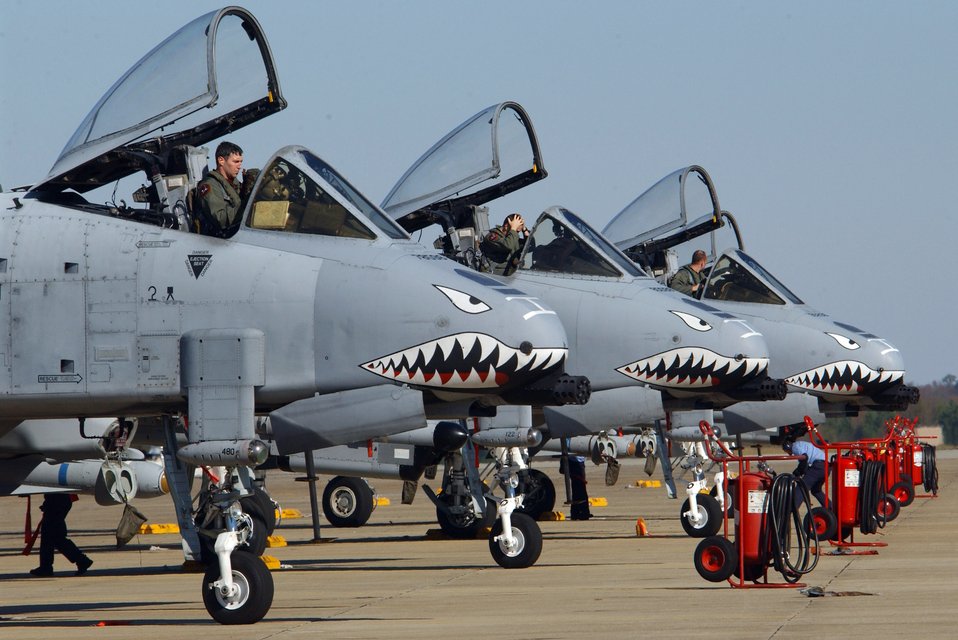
Thunderbolt row

SHAW AIR FORCE BASE, S.C. (AFPN) -- A-10 Thunderbolt IIs shut their engines off after a mission in support of Operation Dynamic Weasel. The exercise is a multi-aircraft exercise simulating combat operations in Southeast Asia. The aircraft are from the 23rd Fighter Group at Pope Air Force Base, N.C.